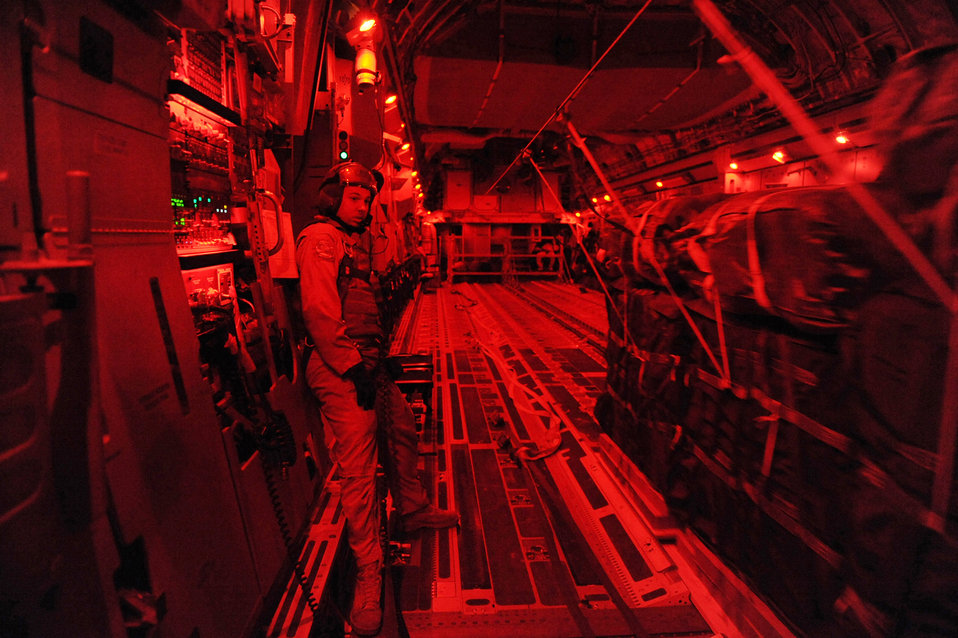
Combat air delivery over Afghanistan

Over a forward operating base in Afghanistan, Staff Sgt. Russell C. Johnson makes sure 40 container delivery system bundles of food and water slide off a C-17 Globemaster III cargo ramp Feb. 1, 2010. He is a C-17 loadmaster assigned to the 816th Expeditionary Airlift Squadron.